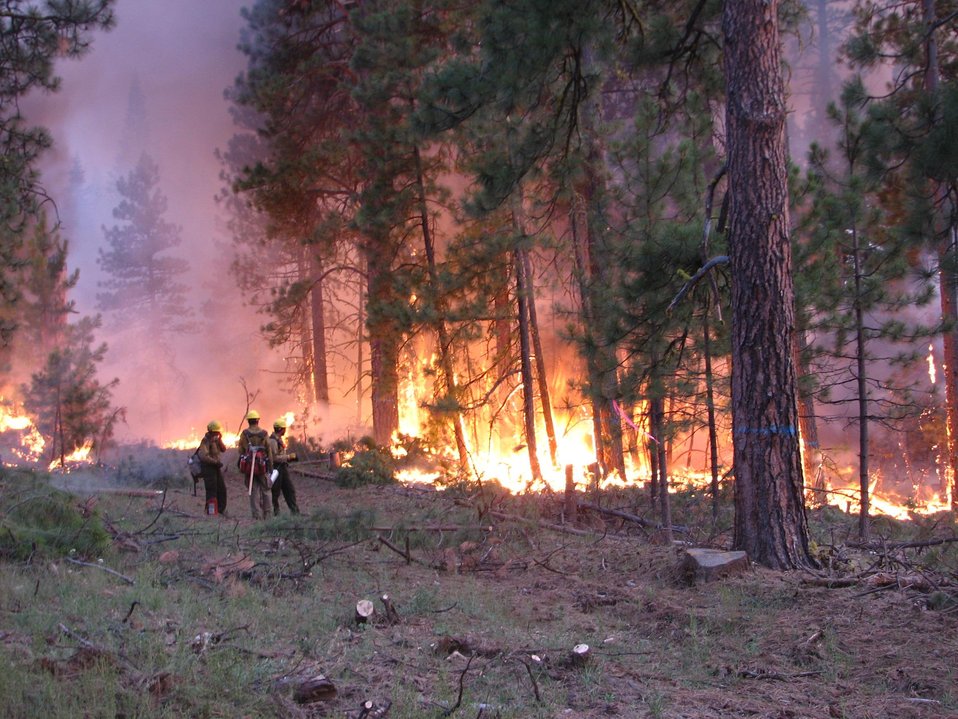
Fire crews work through the night at the Mile Marker 28 Fire on Jul. 7, 30, 2013. The Mile Marker 28 Fire near Goldendale, WA began on Jul. 24, 2013 is under investigation and has consumed approximately 20,337 acres. The fire is approximately 25% contained.